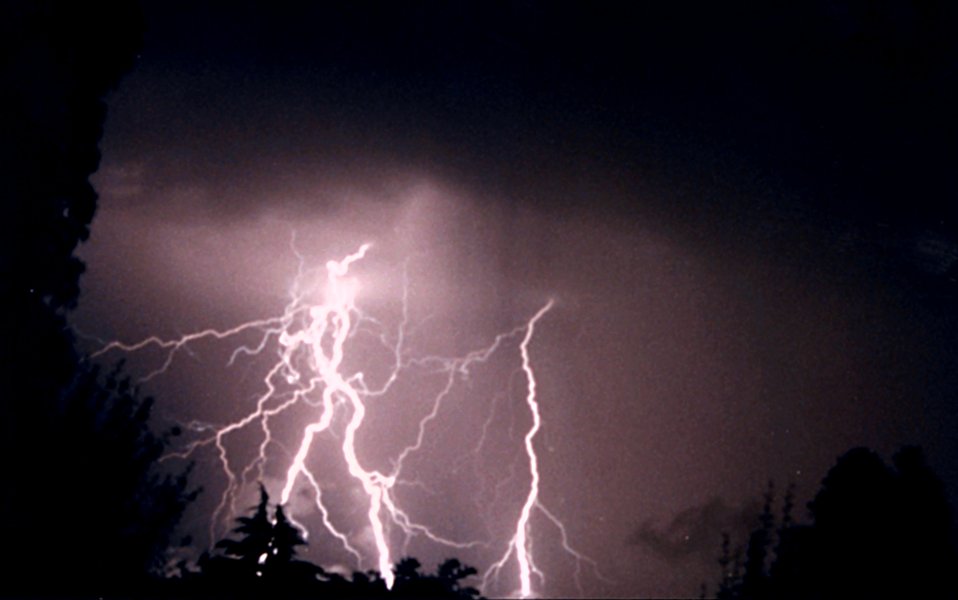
Many of Mr. Lear's lightning photographs are taken from the roof of his home. He has an array of six cameras that can be activated simultaneously in order to capture lightning images. These six cameras span the horizon. Mr. Lear is a welder by trade and has taken lightning photographs for many years as a hobby.